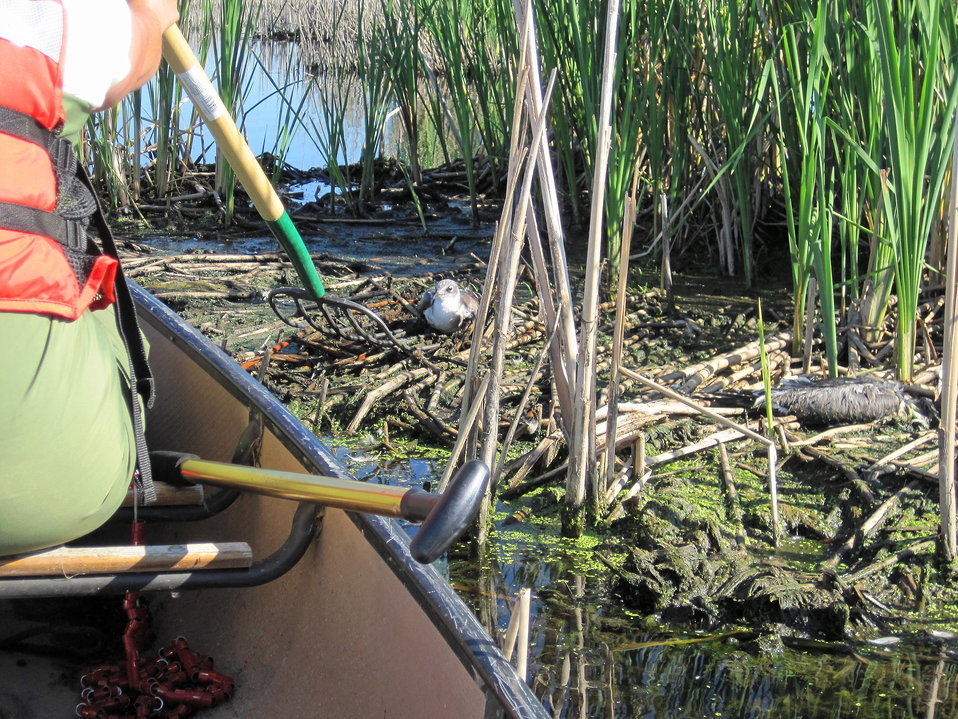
Avian Botulism Investigation

Diane Borgreen from the Wildlife Health Office collects a Franklin's gull affected by avian botulism. Botulism toxin paralyzes the muscles and results in the death of thousands of birds every year.